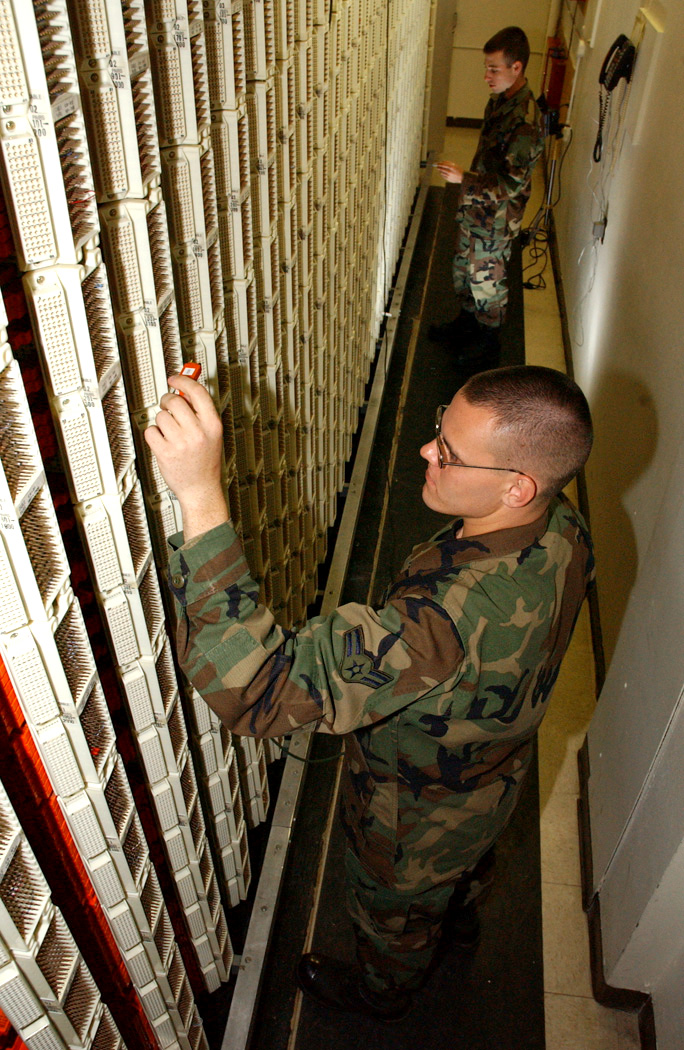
Lines of communication

EIELSON AIR FORCE BASE, Alaska -- Airmen 1st Class Johnathan Free (front) and Samuel Glenn test to make sure a dial tone is working here July 18. They are voice network technicians with the 354th Communications Squadron.